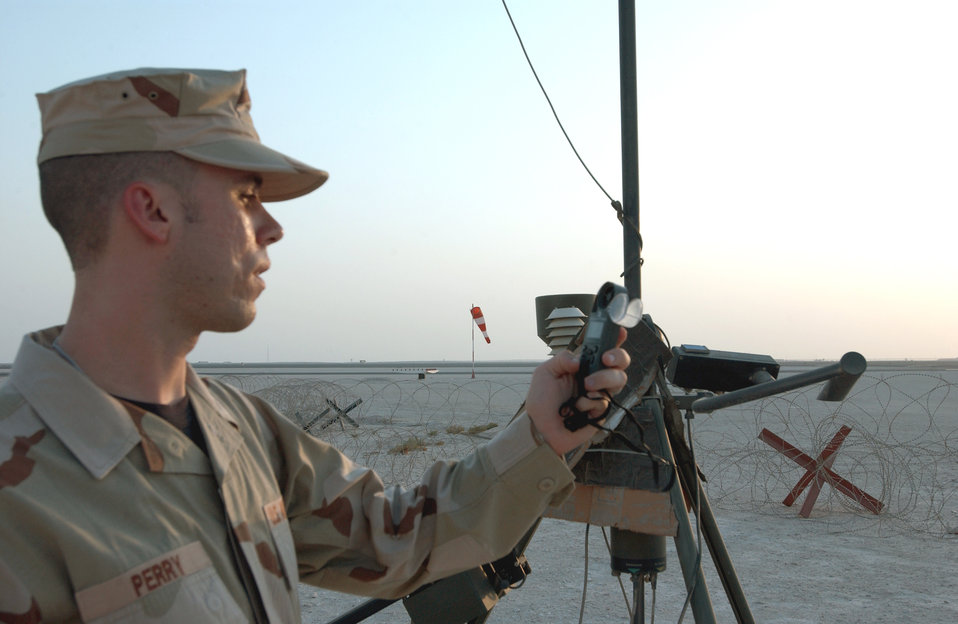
Desert wind

Senior Airman Daniel Perry takes a wind reading at a forward operating base in Southwest Asia Aug. 25. Airman Perry is a weather forecaster assigned to the 379th Expeditionary Operations Support Squadron and is deployed from Robins Air Force Base, Ga.